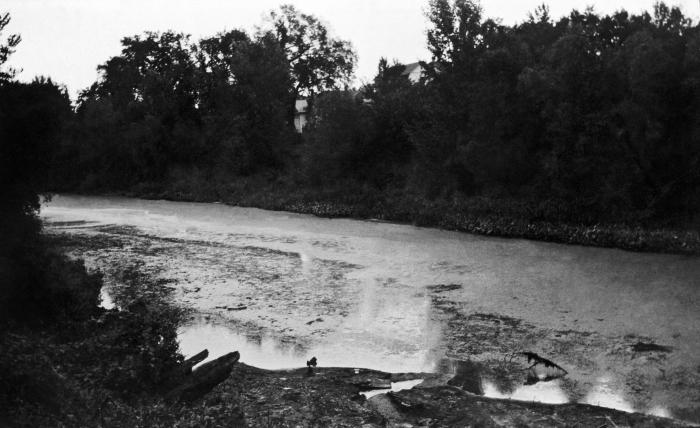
This historic August 16, 1932 photograph revealed the presence of pollution in the Red River at First Street in Fargo, North Dakota. The image was captured during the Red River water quality survey of 1931-1933.